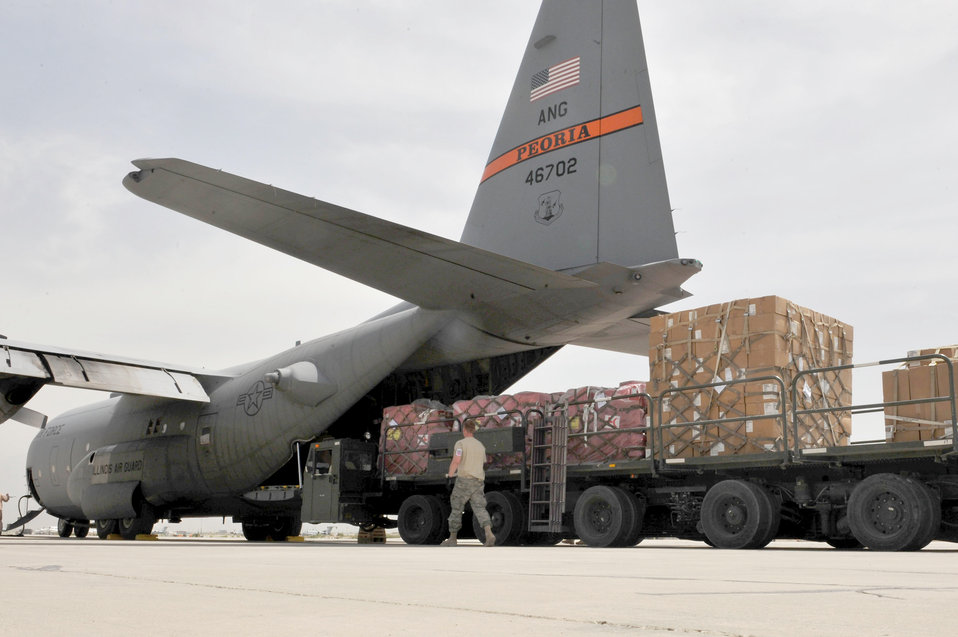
Tajik relief efforts

A C-130 Hercules is loaded with medical supplies, hygiene kits and water in support of flood relief efforts for the people of Tajikistan May 21, 2010, at Bagram Airfield, Afghanistan.